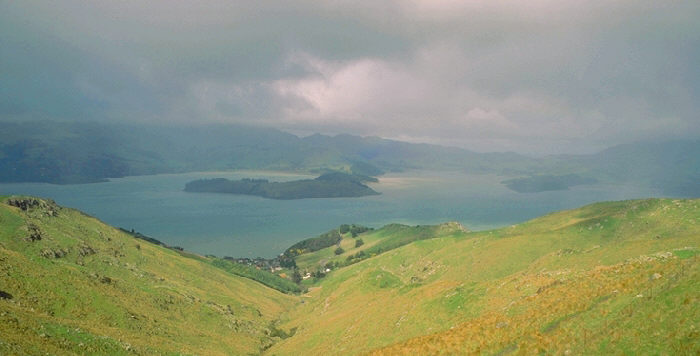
Lyttelton Harbour near Christchurch, South Island, New Zealand.